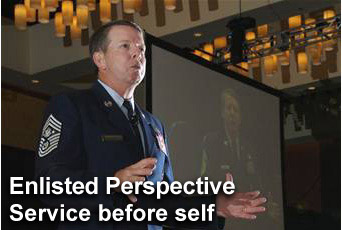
'Perspective' highlights service before self

In his latest